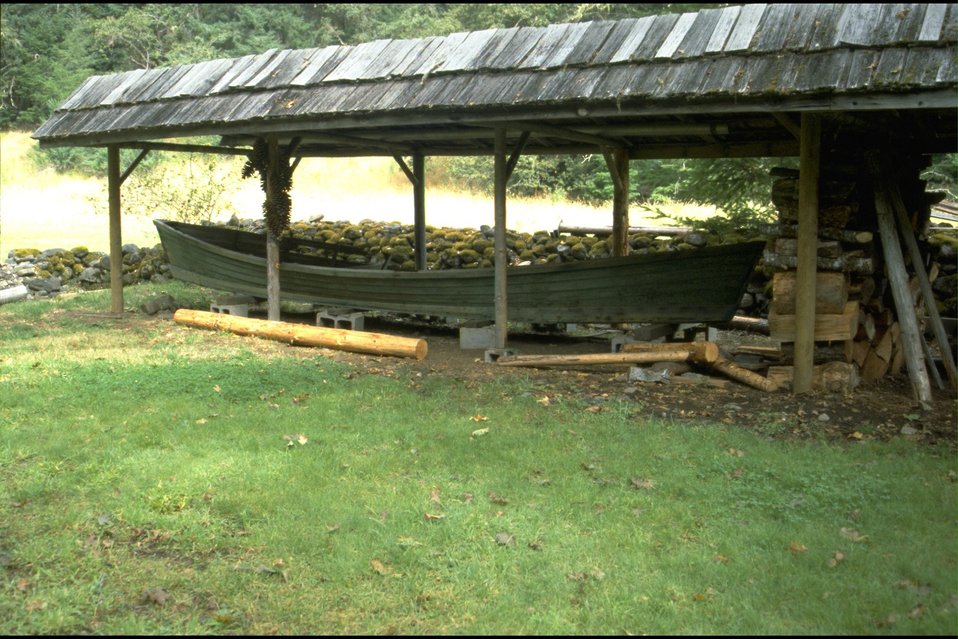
Rogue River - Winkle Bar. Zane Grey's Boat, wild section.